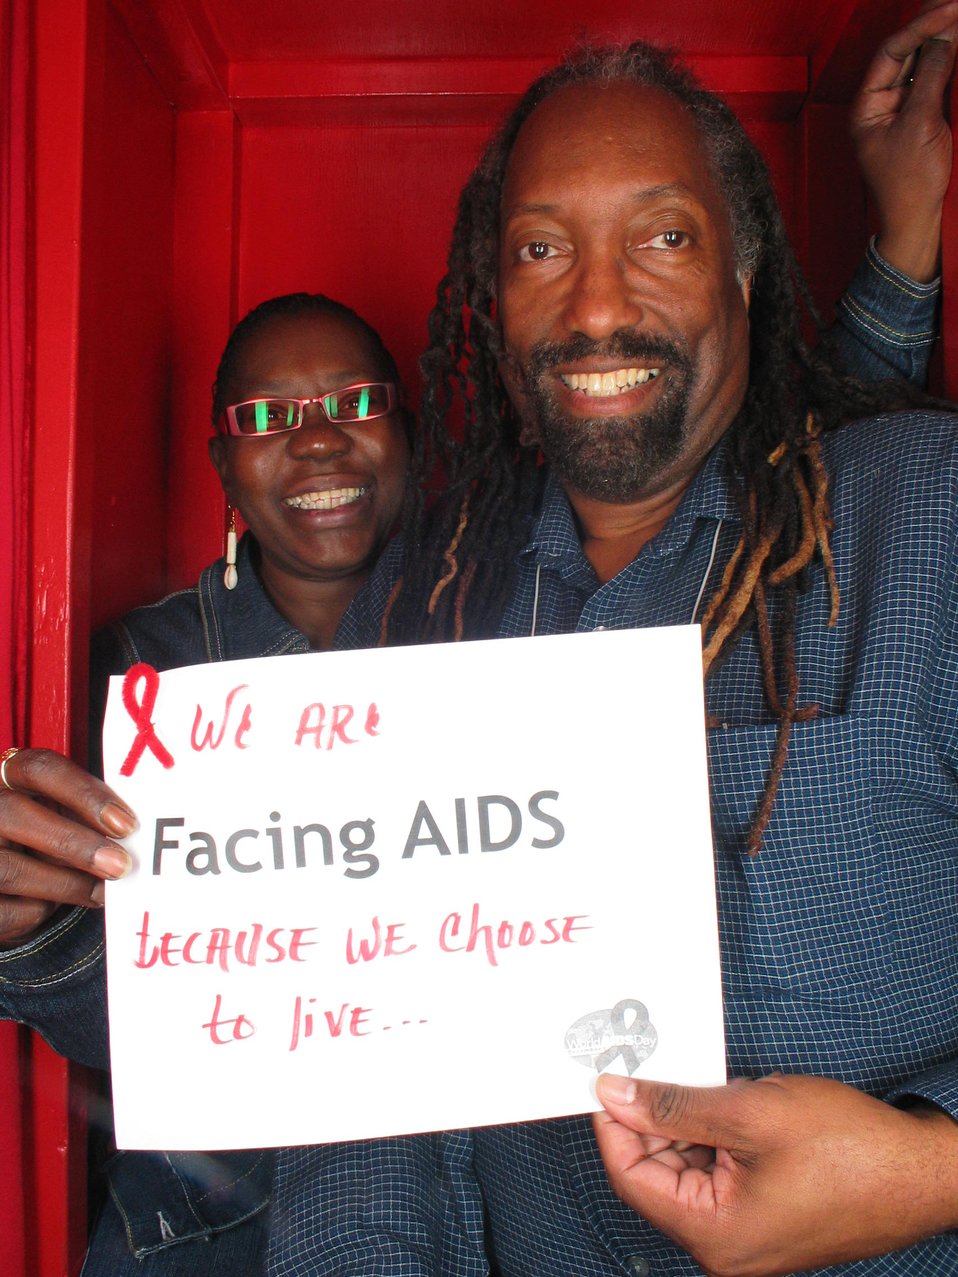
We are Facing AIDS because we choose to live...